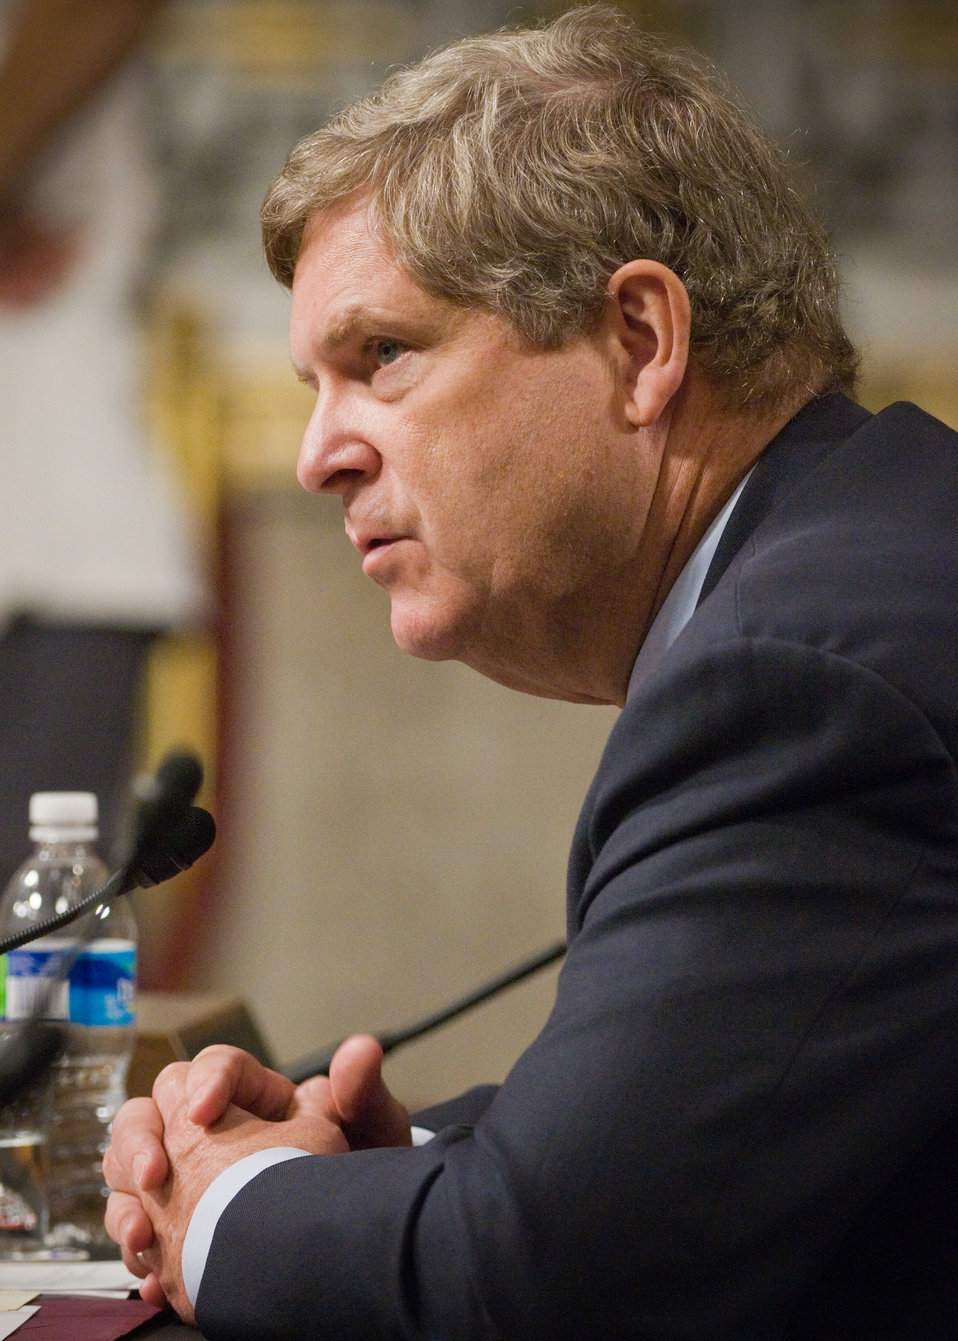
Agriculture Secretary Tom Vilsack attended a Senate hearing on the current 2008 and the 2012 Farm Bill, in the Dirksen Senate Office Building, in Washington, DC, on Wednesday, June 29, 2010. Secretary Vilsack mentioned the importance of the Farm Bill in creating a strong rural economy. USDA Photo 10di1424-089.